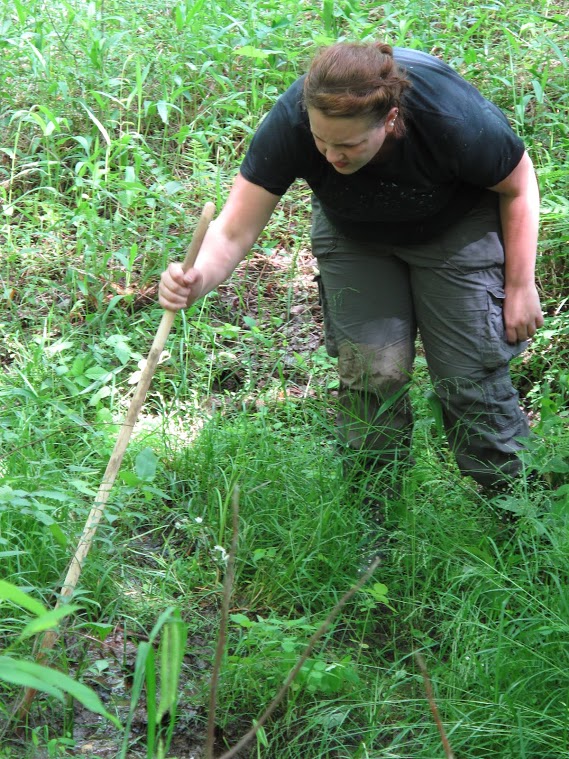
Bog turtle

Scientific name: Clemmys muhlenbergii
Status: Threatened and similarity of appearance

Service intern Lily Dancy Jones searches for bog turtles.